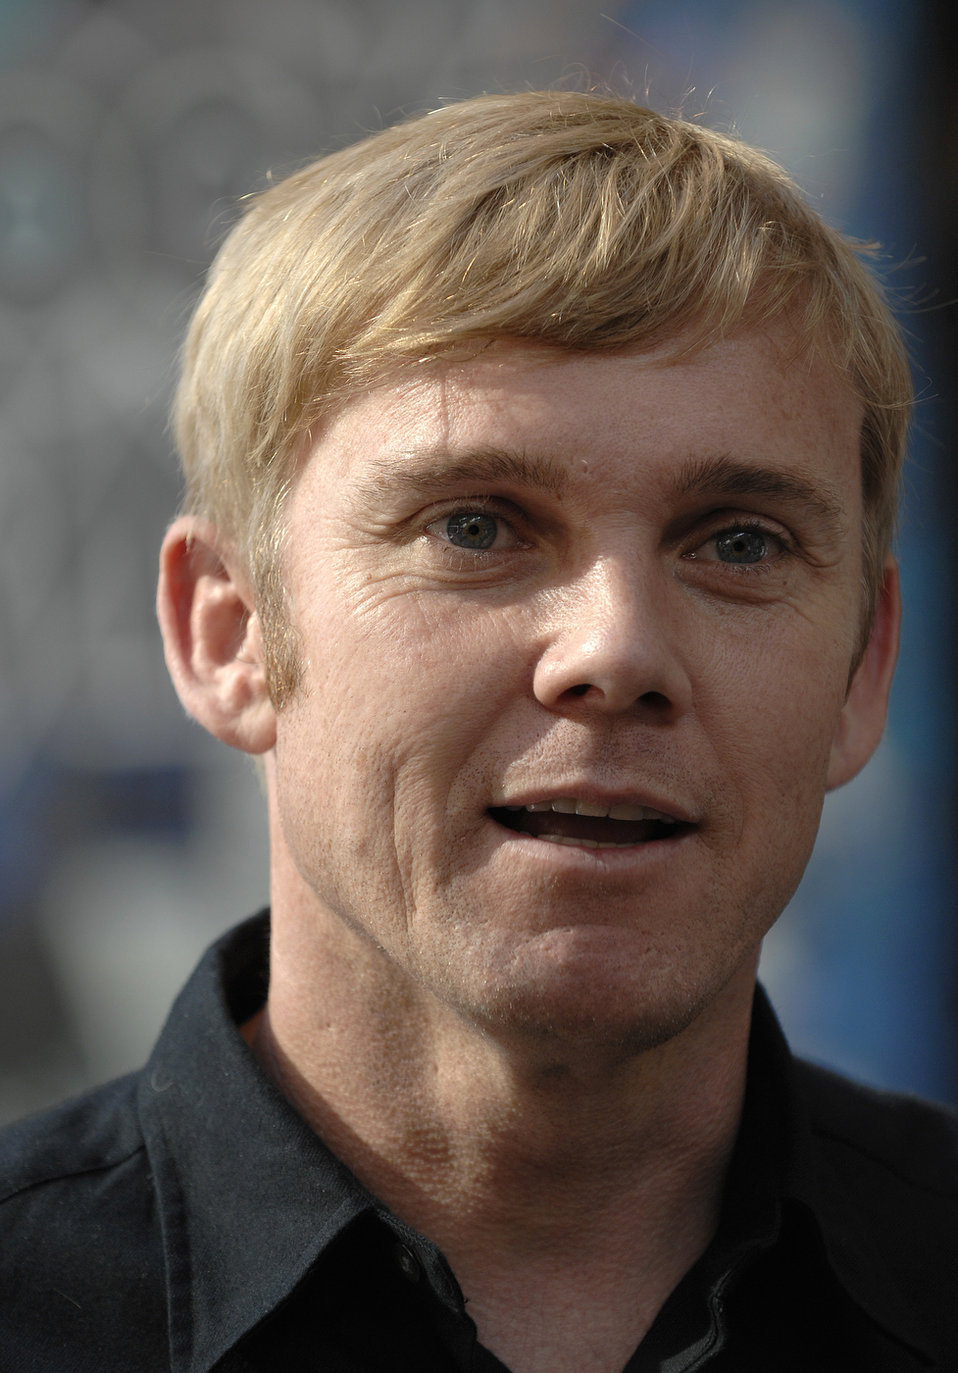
Air Force Week kicks off in Los Angeles

Golden Globe Winning Actor Rick Schroder speaks on his love of military aviation after providing opening comments for the proclamation ceremonies of Air Force Week-Los Angeles on Nov. 14 at Hollywood and Highland Plaza in Los Angeles. The ceremonies include performances by the Air Force Honor Guard Drill Team and Air Force Band of the Golden West with flyovers by several different Air Force aircraft and interactive expos. Air Force Week-Los Angeles continues until Nov. 21 and has events throughout the area.